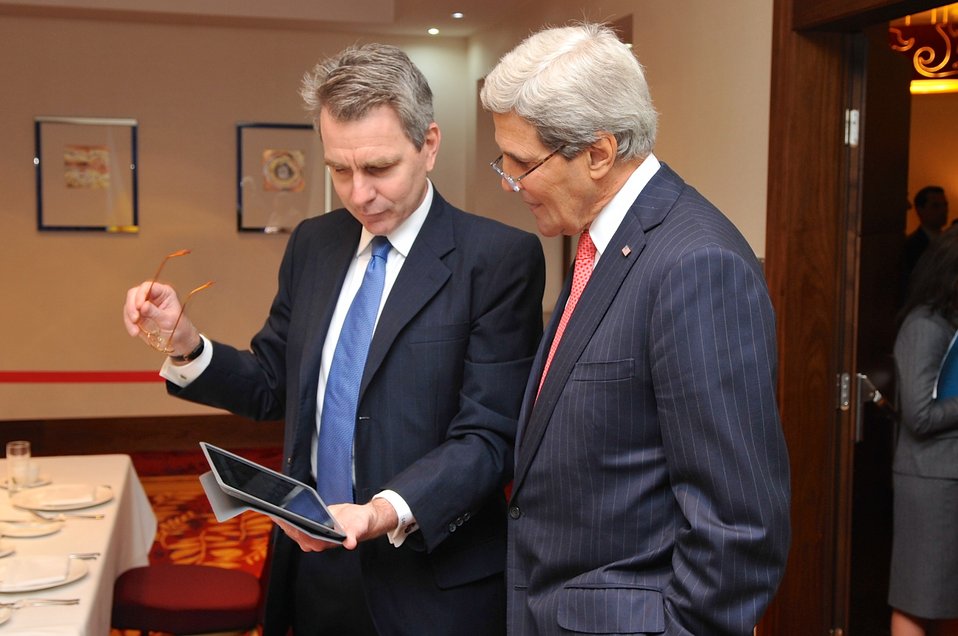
Ambassador Pyatt Shows Secretary Kerry Photos of Armaments Being Used by Separatists in Eastern Ukraine

U.S. Ambassador to Ukraine Geoffrey Pyatt shows U.S. Secretary of State John Kerry photos of advanced armaments being used by pro-Russian separatists in Eastern Ukraine before the two met with Ukrainian President-elect Petro Poroshenko in Warsaw, Poland, on June 4, 2014.